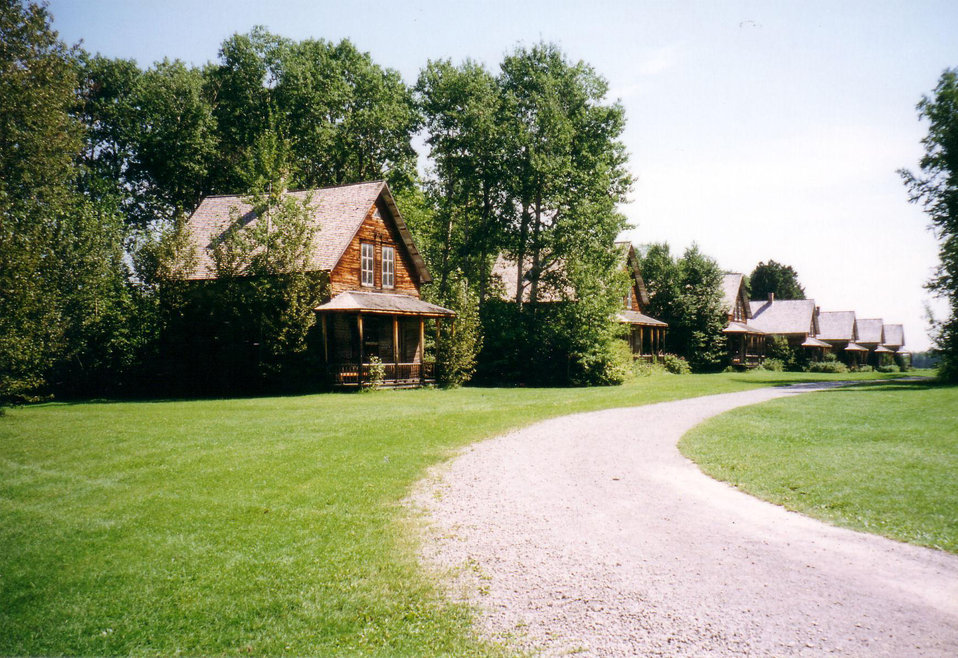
Description: Lost house in Val Jalbert City in Quebec
Author: Juju (http://www.travels-book.net/utilisateurs/juju.html)
WebSite: http://www.travels-book.net